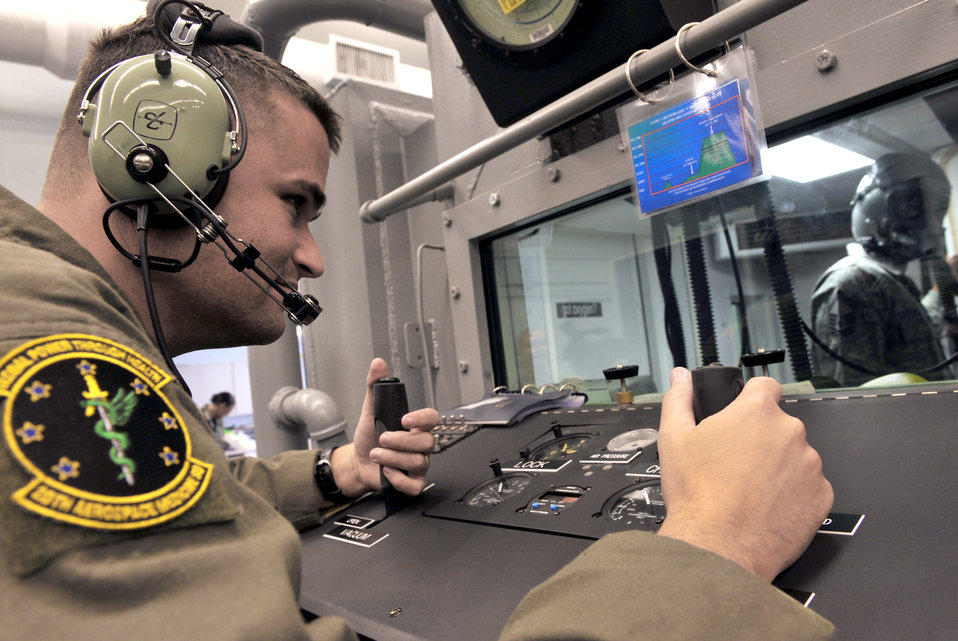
High Altitude Parachute Class PB

Staff Sgt. Adam Tyler operates the lock chamber Nov. 2, 2010, at the aerospace physiology building at Shaw Air Force Base, S.C. The high altitude parachute class focuses on human performance at high altitudes and high-stress levels. Students take this class before freefall school and as a refresher course every five years. Sergeant Tyler is an aerospace and operational physiologist technician with the 20th Aerospace Medicine Squadron